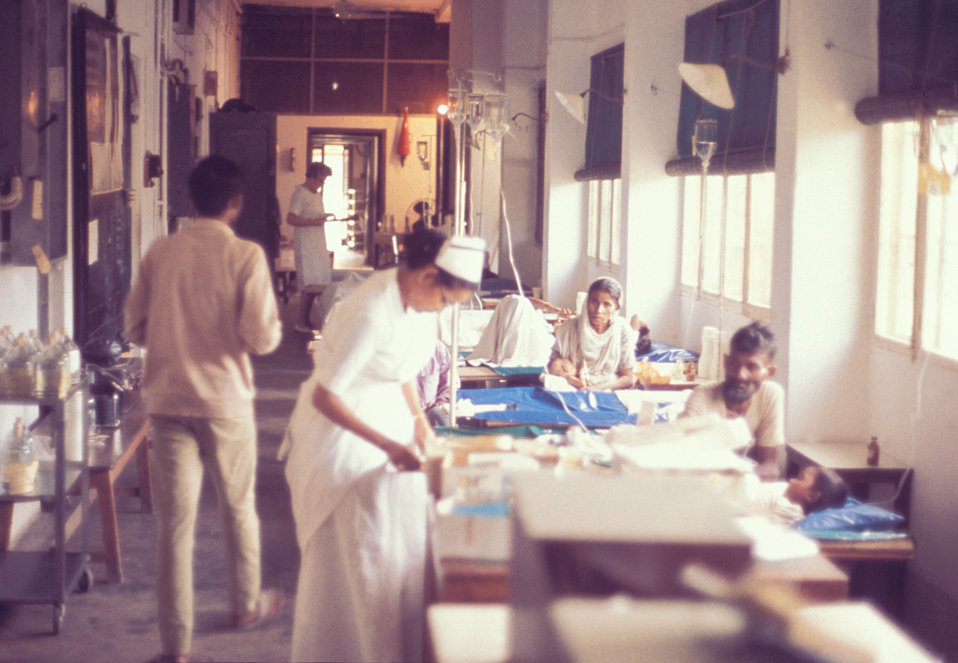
This photograph was taken in a foreign hospital during an Epidemic Investigative Services (EIS) field study.